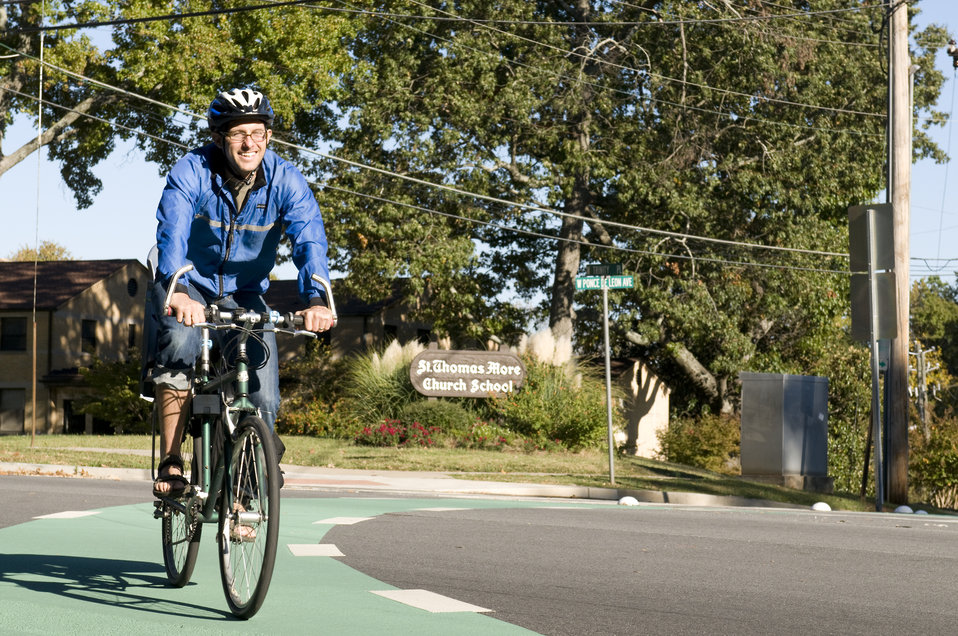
This photograph depicts a smiling male bicyclist, who was riding his bicycle on a sunny Georgia morning. Note the brightly-colored windbreaker he was wearing, which would help drivers see him more easily, as well as the protective, aerodynamic helmet, and the snug leggings, all adding to an overall safer bike ride. Also important, is that he was riding in the designated bicycle traffic lane, and abiding by the proper rules of the road, which govern drivers of both bicycles, and motorized vehicles.